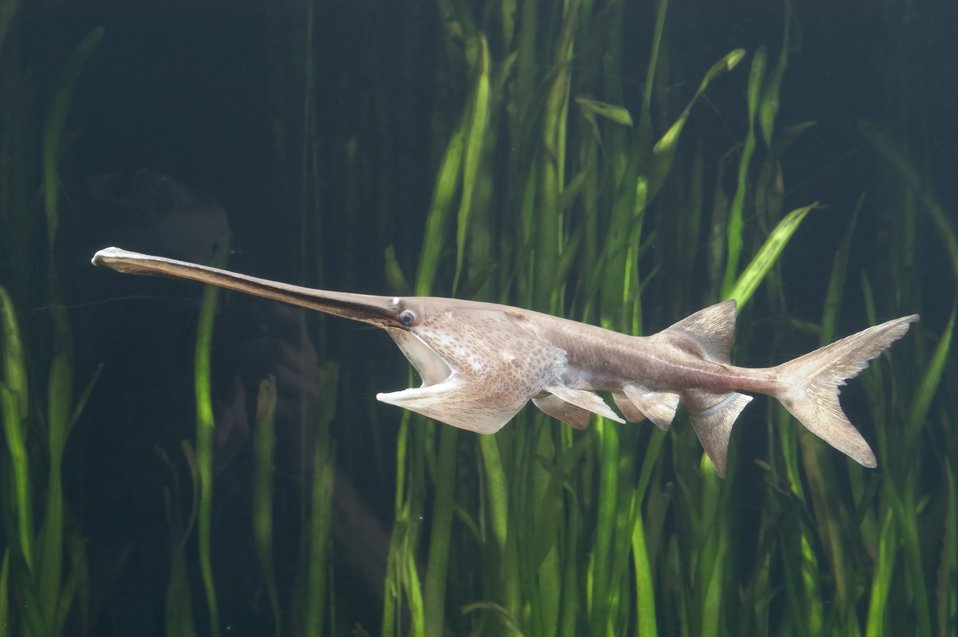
#25 - Guess the Species!

Countdown to CoP16: Can you guess this animal? Found in the Southeast United States, this freshwater species can grow to be over five feet long! Its unusual snout contains electroreceptors that help the fish to better find its favorite food--tiny little organisms called zooplankton. This fish filters its food through “gill rakers,” similar to basking shark.

Paddlefish. Taken by USFWS.